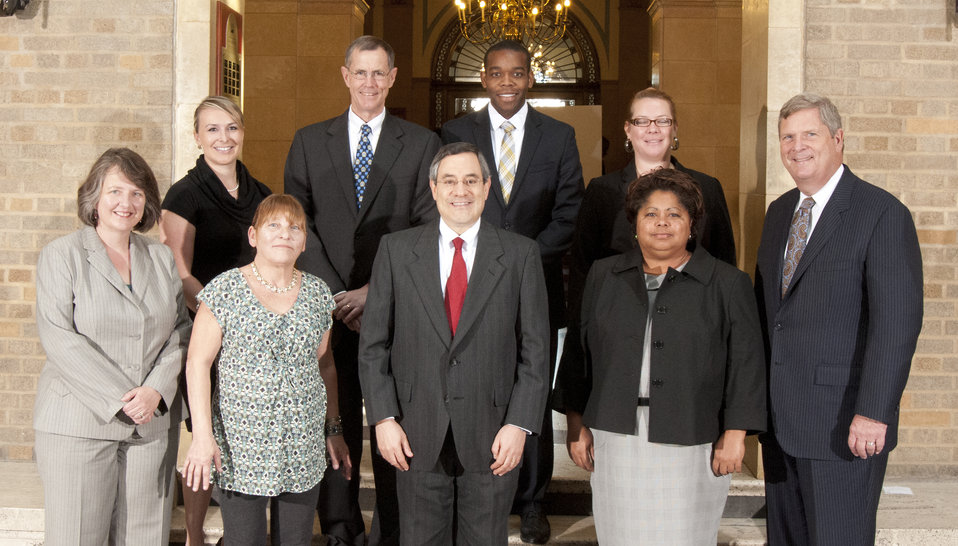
Agriculture Secretary Tom Vilsack and Deputy Agriculture Secretary Kathleen Merrigan with Honor Award Group Ethics Electronic Filing Implementation Team, Office of Human Resource Management (OHRM) on the patio of the U.S. Department of Agriculture in Washington, D.C. on Wednesday, Sept. 12, 2012. The Ethics Electronic Filing Implementation Team provided significant contributions to the management excellence of USDA by implementing secure electronic filing of ethics financial disclosure reports for the Department’s 700 public financial disclosure filers.